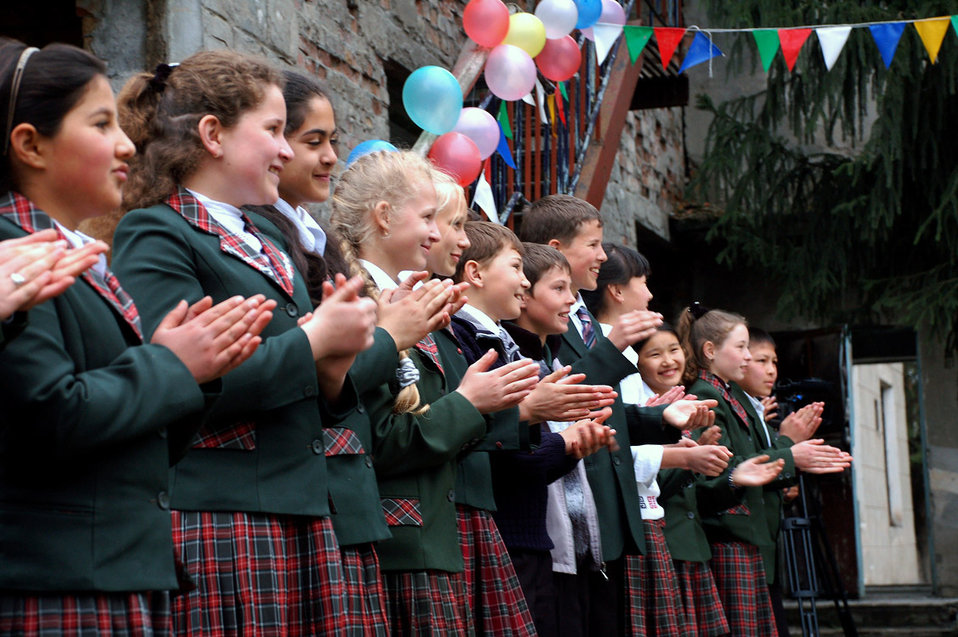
School renovation project builds bond between U.S., Kyrgyz Republic

The children of the Birdik Village School in Kyrgyzstan are all smiles after a ground-breaking ceremony April 14 for a $470,000 project to repair their school. The renovation project slated for completion by September 2009 is sponsored between the U.S. State Department, U.S. Central Command, Manas Air Base, Kyrgyzstan and Birdik Village.